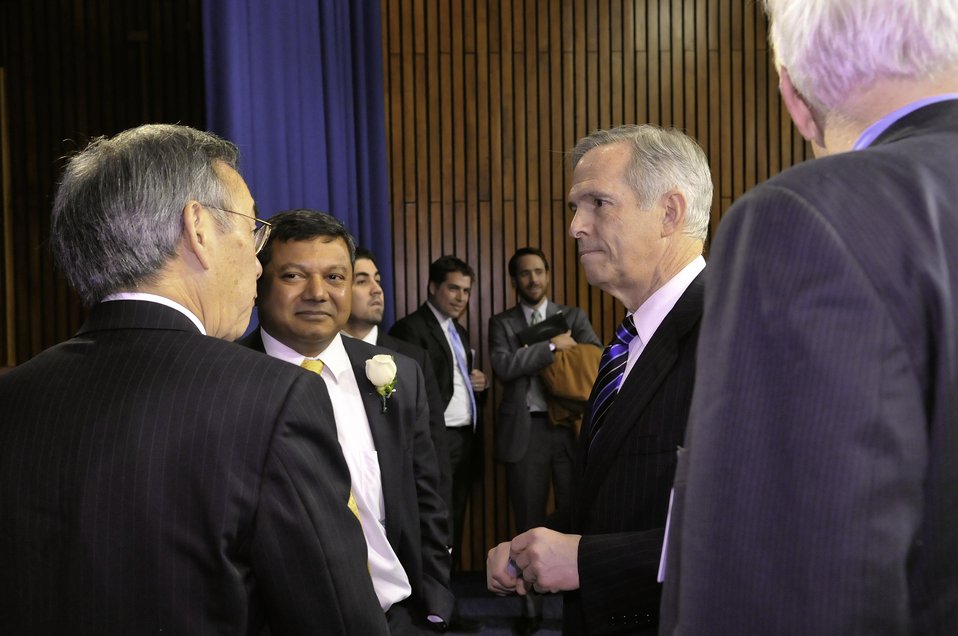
DSC21~4